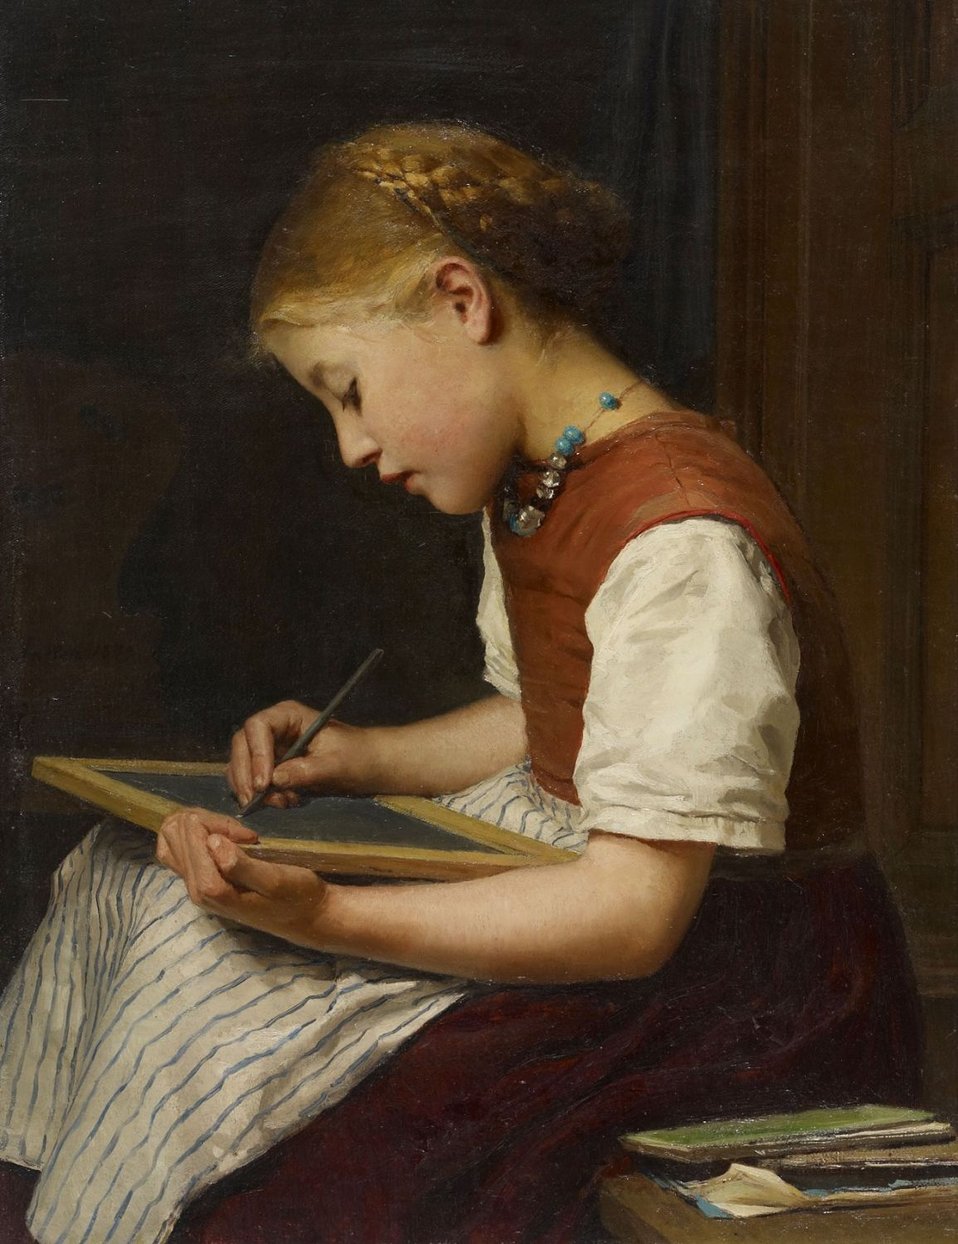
Albert Anker - Schulmädchen bei den Hausaufgaben